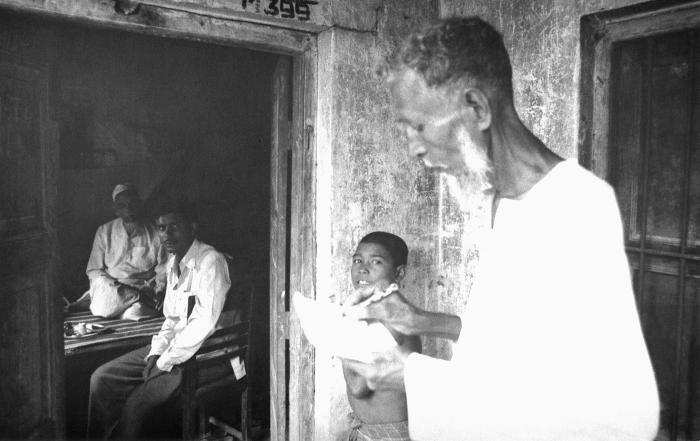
Searching house to house in his quest to find any remaining smallpox cases, this elderly community volunteer smallpox eradication team member was querying the occupants of this residence. If, indeed, a case was reported, from no matter the source, it was investigated fully, and if confirmed as a smallpox case, a reward was paid to the informant, no matter the age, and it was entered into the 'Containment Book'. The Containment Book was a ledger, which recorded all of the names of anyone living in, or within one half a mile from a smallpox case, and subsequently all those listed were vaccinated against smallpox. Those vaccinated were followed until a 'successful' vaccination was observed.